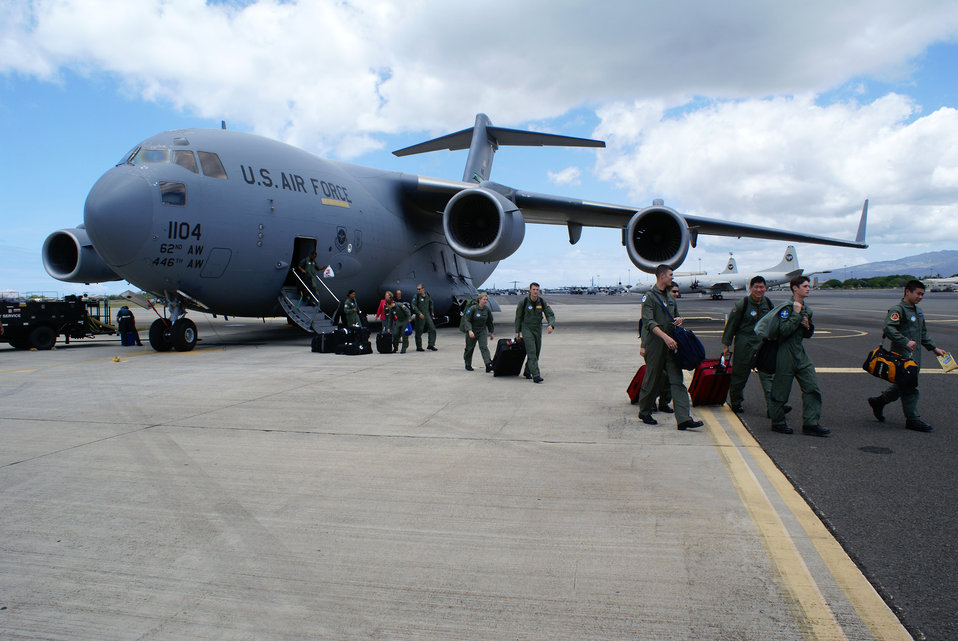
Cadets learn mission through Operation Air Force

U.S. Air Force Academy cadets arrive June 15 to Hickam Air Force Base, Hawaii. The cadets flew from McChord AFB, Wash., as part of Operation Air Force, a career-broadening program.